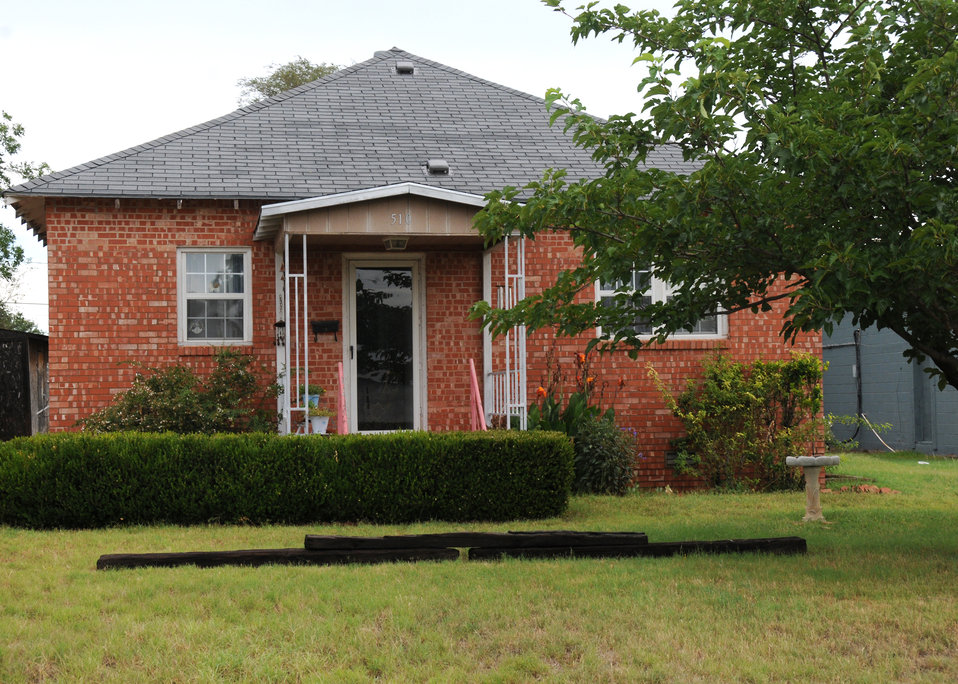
Ms. Shirley Ford's home in Hollis, OK. Ms. Ford was able to purchase with the aid of Rural Development in Hollis, Oklahoma. Through the use of American Recovery and Reinvestment (ARRA) funds RD was able to loan Ms. Ford $11,730.00 towards the purchase of her first home. Ms. Ford received additional funding for a down payment from two non-profit agencies. Ms. Ford had a heart attack a year ago and used the money she had saved for the down payment on her home to pay her medical bills. She has no health insurance.